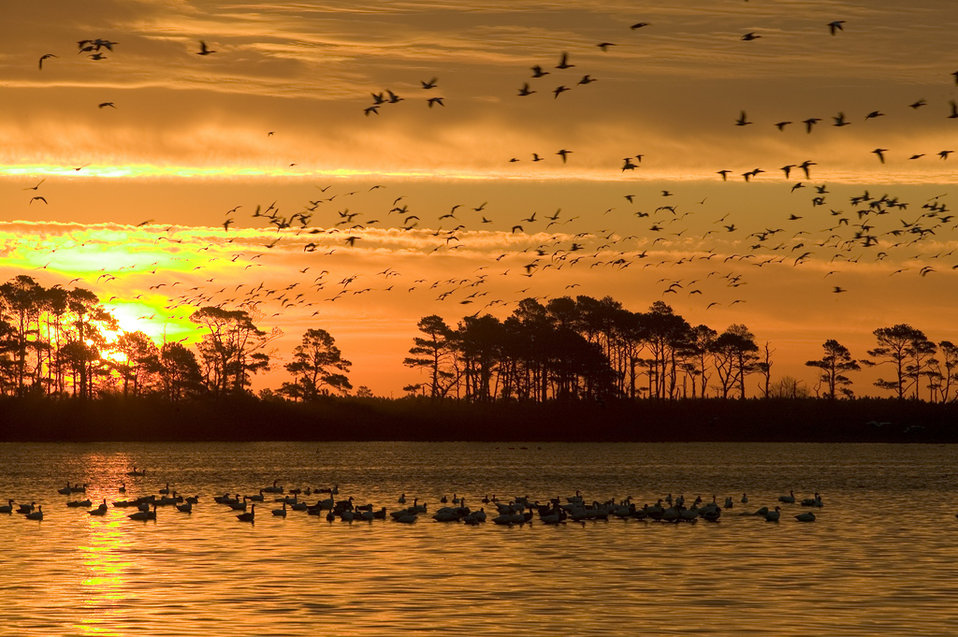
Chincoteague NWR Steve Hillebrand USFWS

A visitor to Chincoteague National Wildlife Refuge in Virginia may see bald eagles, bottle-nosed dolphins, wild ponies and waterfowl flocks in a single afternoon.